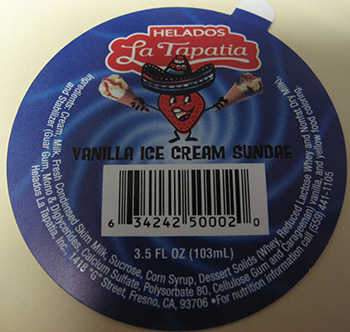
RECALLED – Ice cream products

March 19, 2014 – Product Recall – Helados La Tapatia, Inc. Recalls Products Because of Possible Health Risk.